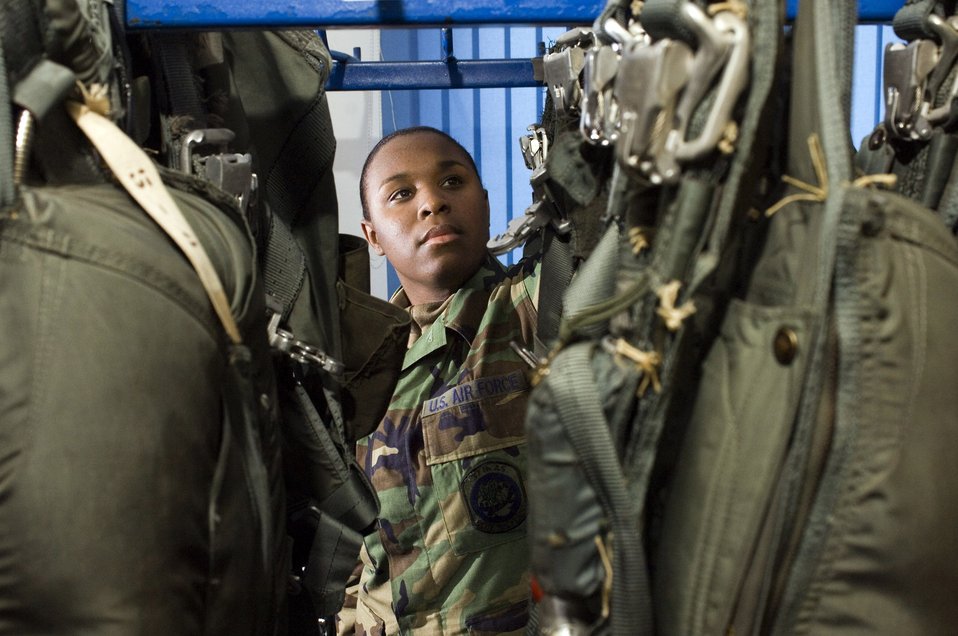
Life-saving inspection

RAMSTEIN AIR BASE, Germany (AFPN) -- Senior Airman Shake Phifer returns a flight harness after inspection. The life support section keeps all aircrew gear ready at all times. Night vision goggles, parachutes and survival vests are just a few of the items they maintain. Airman Phifer is a life support journeyman with the 37th Airlift Squadron and from Oak Grove, La.